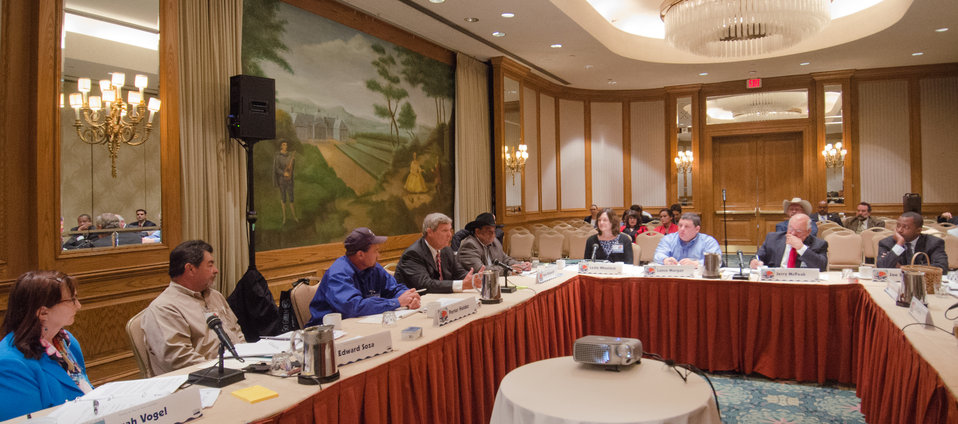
Agriculture Secretary Tom Vilsack, fourth from left, at the U.S. Department of Agriculture's (USDA) Council for Native American Farming and Ranching (CNAFR) members, on Monday, Sep. 9, 2013 at the L'Enfant Plaza Hotel, in Washington, D.C. CNAFR was created to advise the Secretary on ways to eliminate barriers to participation for Native American Farmers and Ranchers in USDA programs. The Council was established as part of the Keepseagle settlement, and is conducted under the oversight of USDA's Office of Tribal Relations, which is part of the Office of the Secretary of Agriculture. Also in attendance is The Director of Tribal Relations Leslie Wheelock, Agriculture Assistant Secretary for Civil Rights Joe Leonard, Jr. Ph.D., Farm Services Administration Administrator Juan M. Garcia and Deputy Administrator for Farm Loans Programs Chris Beyerhelm.